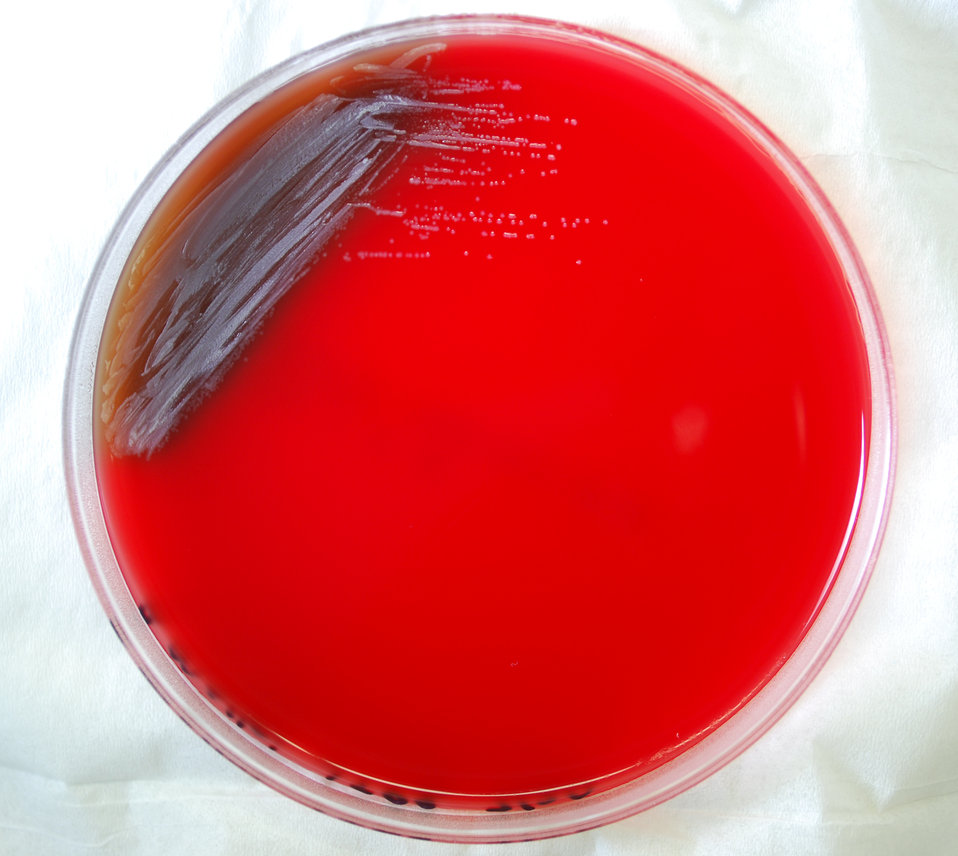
This photograph depicts the colonial morphology displayed by Gram-negative Burkholderia pseudomallei bacteria, which was grown on a medium of sheep's blood agar (SBA), for a 24 hour time period, at a temperature of 37�C.